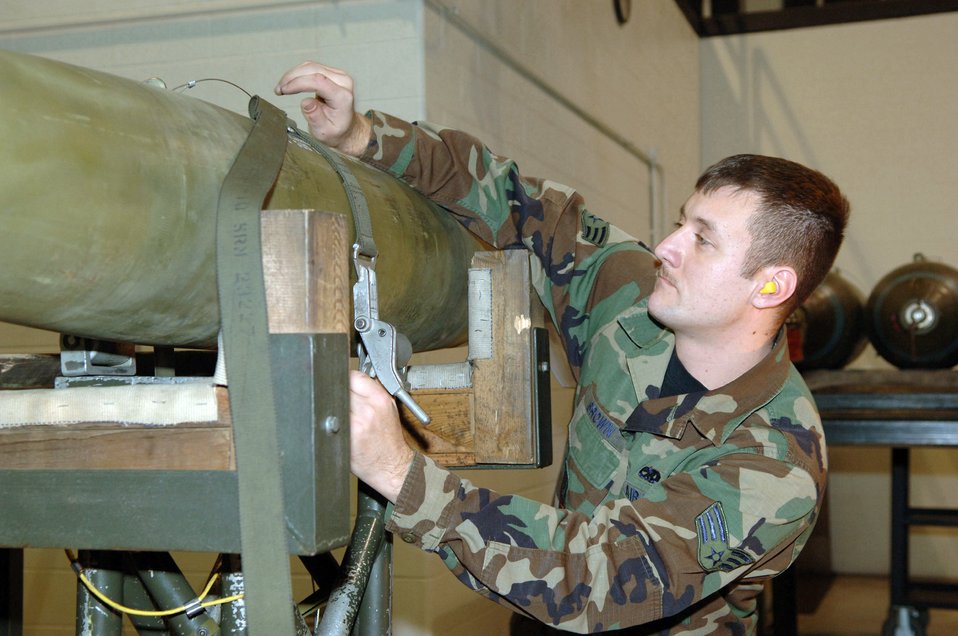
Secure bomb

MINOT AIR FORCE BASE, N.D. (AFPN) -- Senior Airman George Brown secures a bomb onto an M-J1 jammer during a load crew competition here Jan. 27. The crews loaded nine Mk-82 500-pound general purpose bombs onto a B-52H Stratofortress. The four-person crews were graded on teamwork, safety, precision and speed. Airman Brown is a weapons loader assigned to the 5th Aircraft Maintenance Squadron.